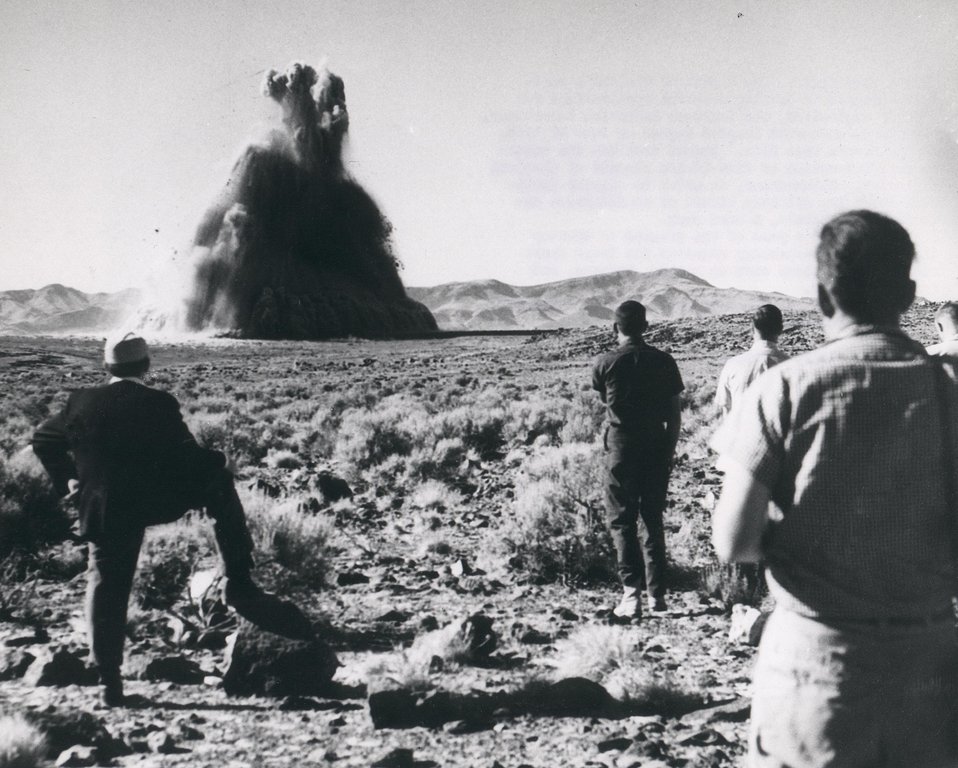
NEVADA TEST SITE...As part of the AEC's Plowshare program to develop peaceful applications for nuclear explosives, the Lawrence Radiation Laboratory, Livermore, conducted Project Dugout on June 24, 1964. Circa 1964.